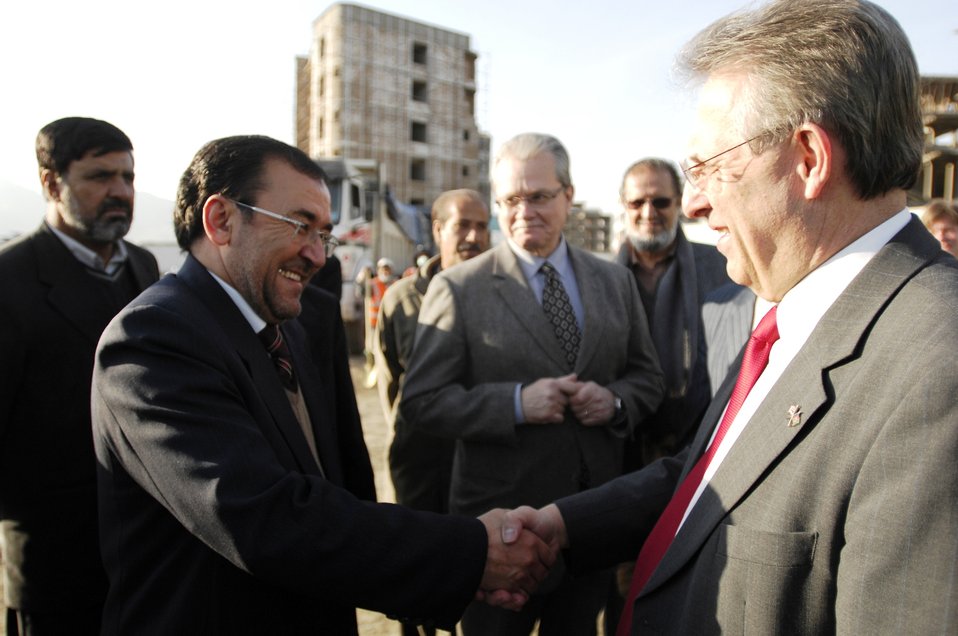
Care48